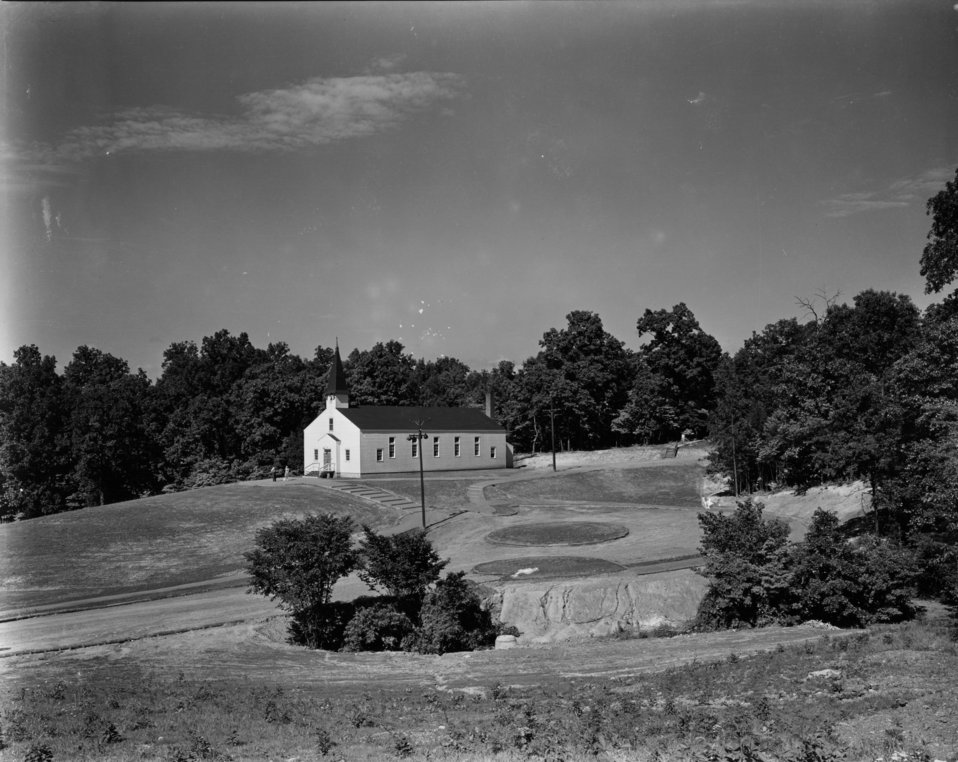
Church activity at Oak Ridge